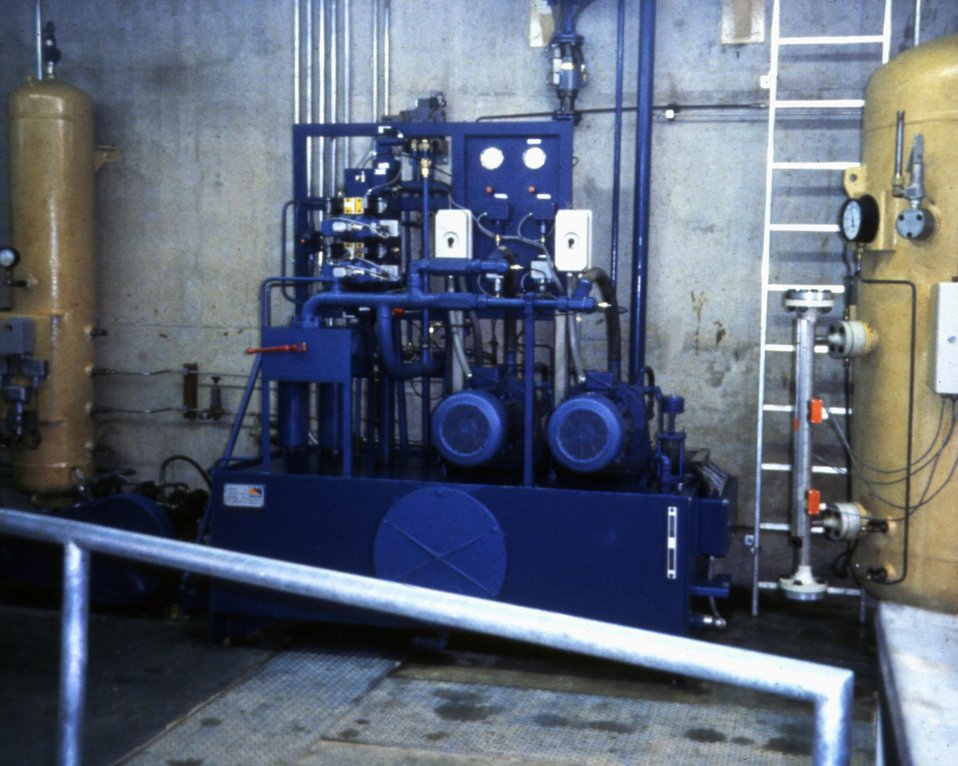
GENERAL VIEW OF AUXILIARY EQUIPMENT FLOOR.

THE DOE SMALL-SCALE HYDROPOWER PROGRAM CONSISTS OF 19 PROJECTS AND DEMONSTRATES THE VIABILITY OF SMALL-SCALE HYDRO-POWER WITH AVAILABLE TECHNOLOGY. THE BROAD RIVER PROJECT, BEGUN IN JANUARY, 1983, WENT ON LINE DECEMBER 27, 1987. UTILIZING ONE OPEN-PIT TUBULAR TURBINE THAT PRODUCES A MAXIMUM OF 4,140 KILOWATTS, THE DAM PROVIDES A GROSS HEAD OF 20.2 FEET WITH AN ANNUAL STREAM FLOW OF 2,472 CFS.